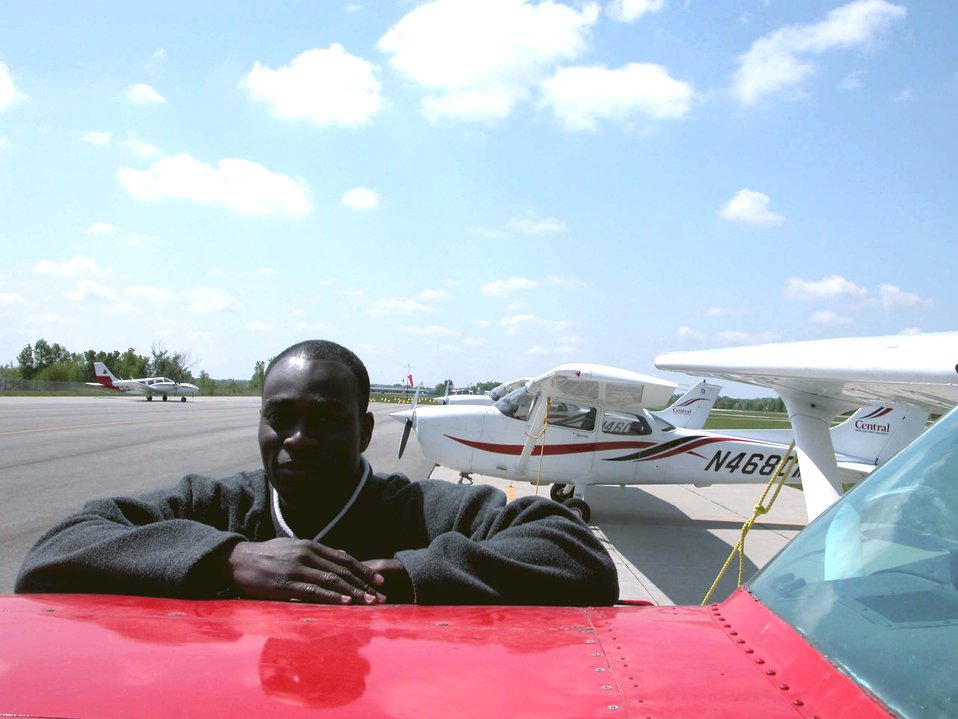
Chasing a dream

WARRENSBURG, Mo. -- As a child, Senior Airman Kamarudini Raimi dreamed of becoming a pilot while growing up in Accra, Republic of Ghana. At 24, he moved to the United States to chase that dream.